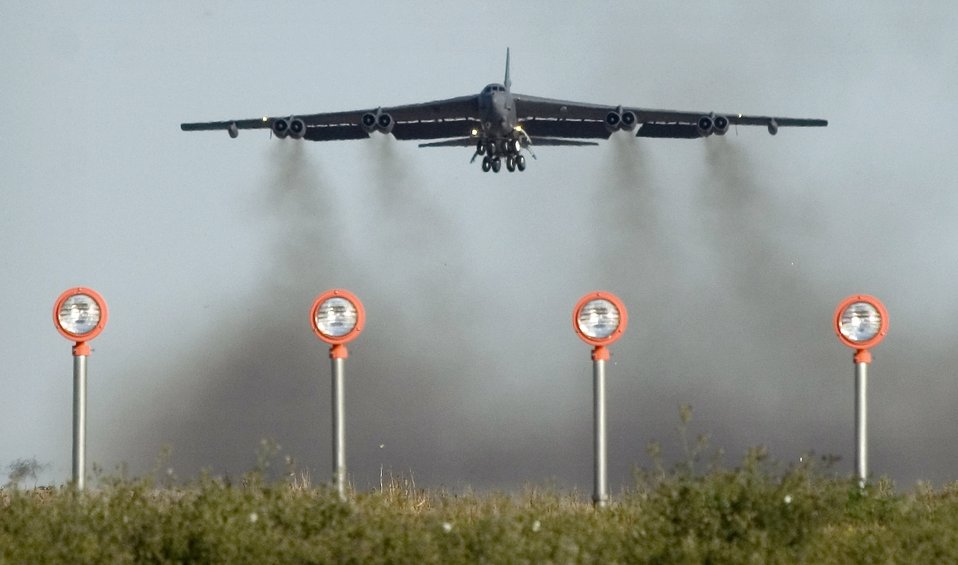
B-52 operations

A B-52 Stratofortress takes off from Minot Air Force Base, N.D., Aug. 21. The bomber from the 5th Bomb Wing conducted a training mission in the skies over North Dakota.